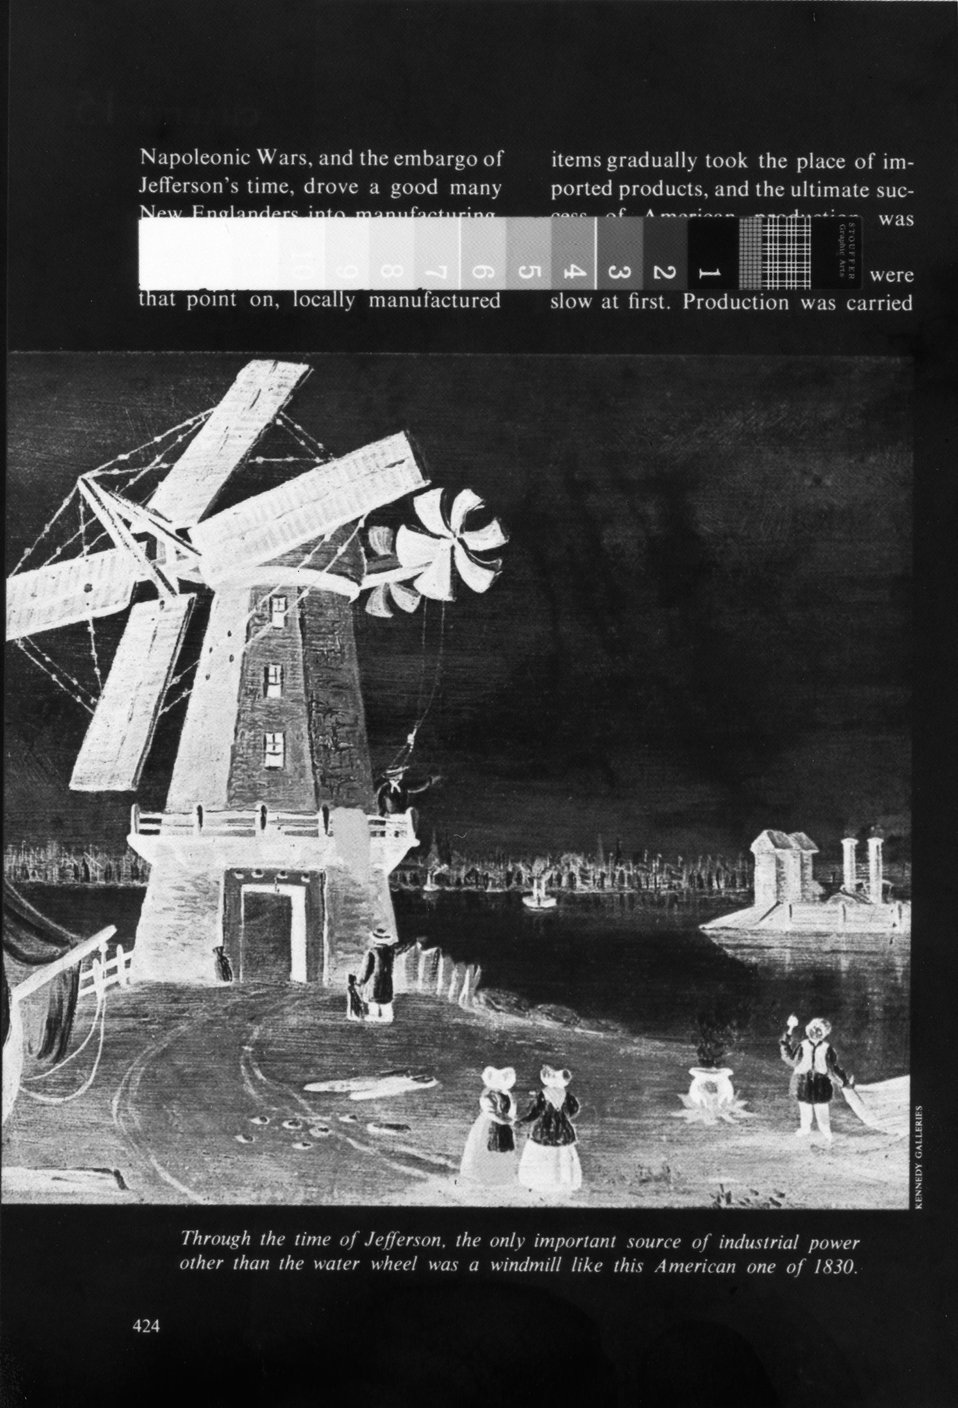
Through the time of Jefferson, the only important source of industrial power other than the water wheel was a windmill like this American one of 1830. c. undated